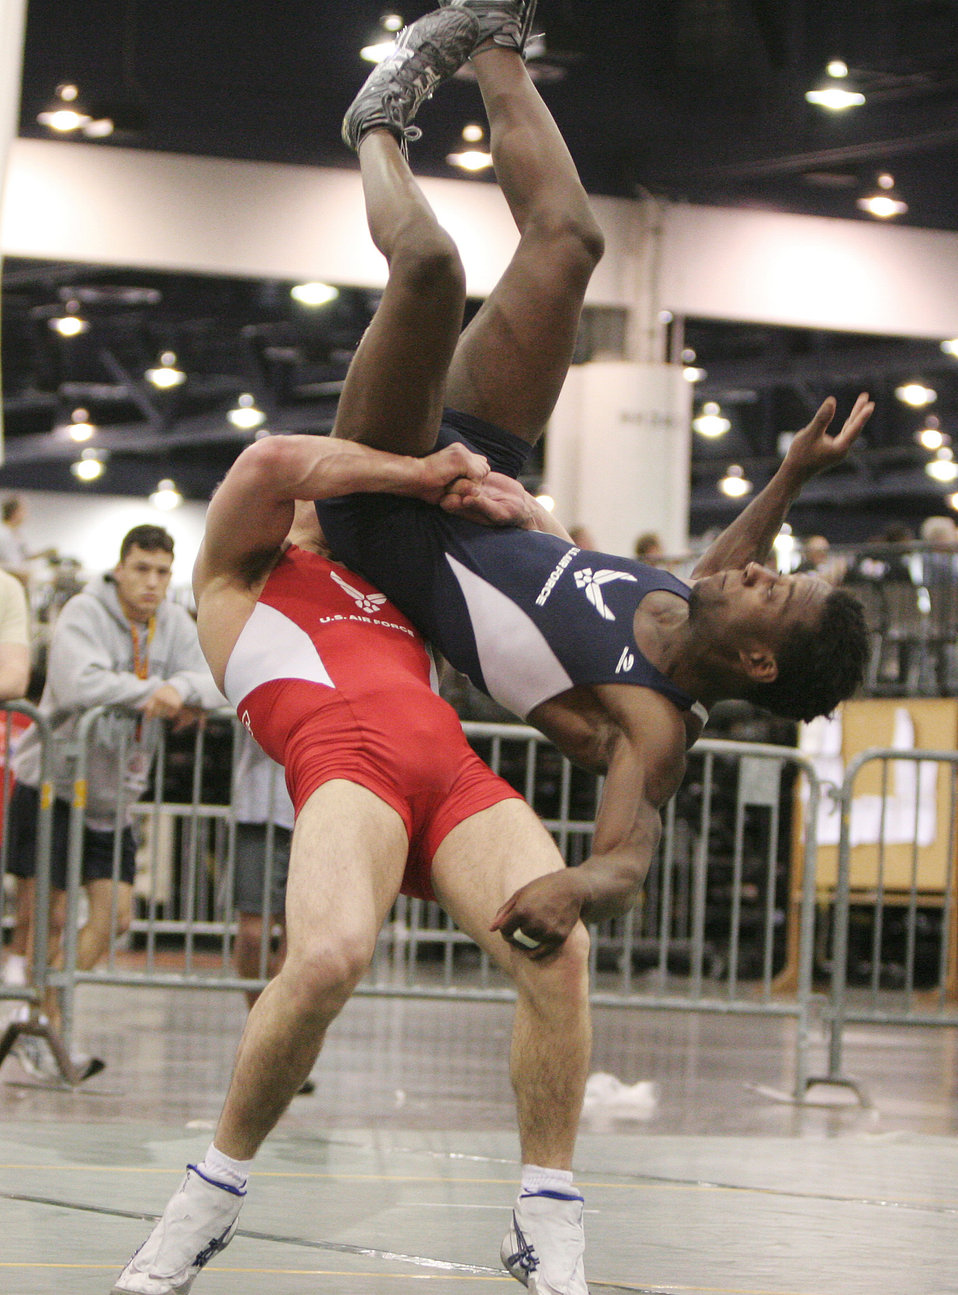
Air Force wrestlers compete in Las Vegas tourney

Senior Airman Jared Moreland performs a lift and toss on his opponent and fellow teammate Capt. Anthony Brooker at the USA National Senior Men's and Women's Wrestling Championships in Las Vegas on Saturday, April 15, 2006. Captain Brooker recovered and went on to win the match and finish seventh overall. He is stationed at Vandenberg Air Force Base, Calif., and Airman Moreland is at Cannon AFB, N.M.